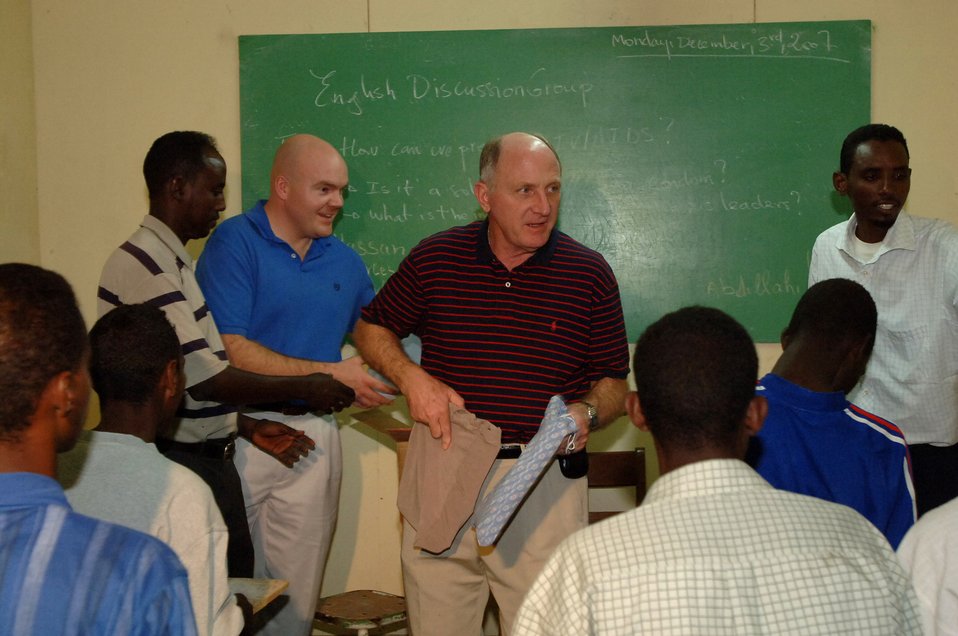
Air Force chief of chaplains visits troops in Horn of Africa

Chaplain (Maj. Gen.) Charles C. Baldwin hands out school supplies to the students of Horsed Private School of English following an English Discussion Group Dec. 3 in Djibouti City, Djibouti. The school supplies were donated by the Combined Joint Task Force-Horn of Africa's Spouses Group. Chaplain Baldwin is the Air Force chief of chaplains.